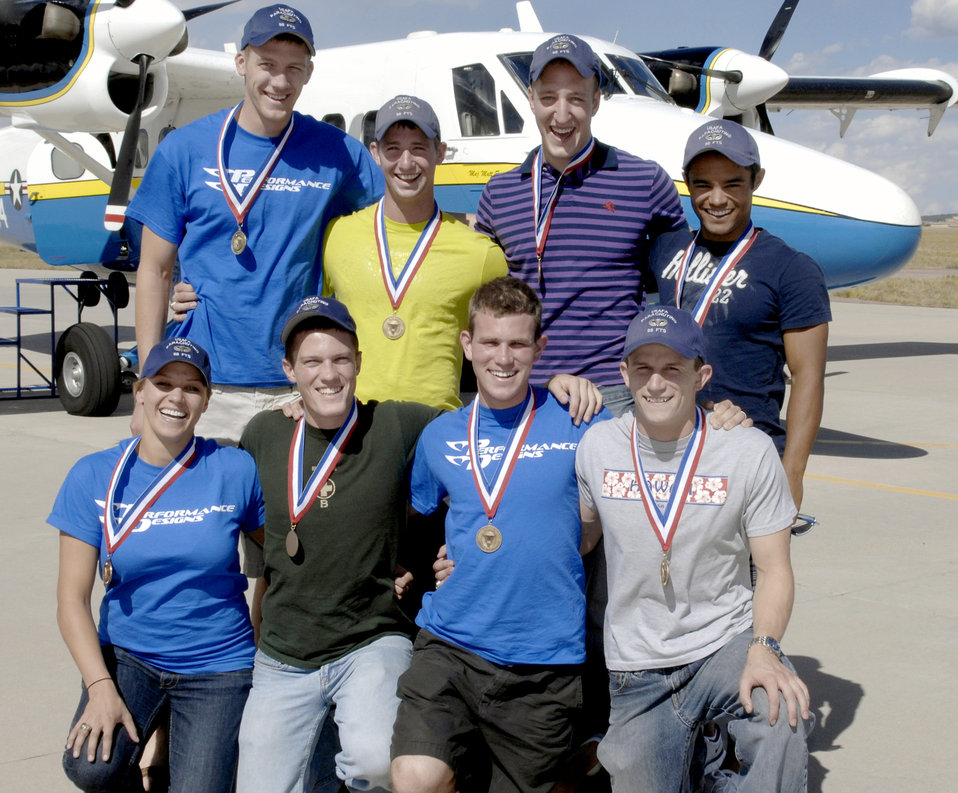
Wings of Blue wins 1st national title

The Wings of Blue Air Force Parachute Demonstration Team won the U.S. Parachute Association National Skydiving Championships Sept. 11 through 12, 2010, in Ottawa, Ill. Cadets 1st Class Zoe Kotnik (left to right, first row), Kyle Yohe, Eric Wallace, Josh LeMair, Kyle Tomaszewski (second row) , Alex Meyer, Nolan Sweeney and Mike Walker.